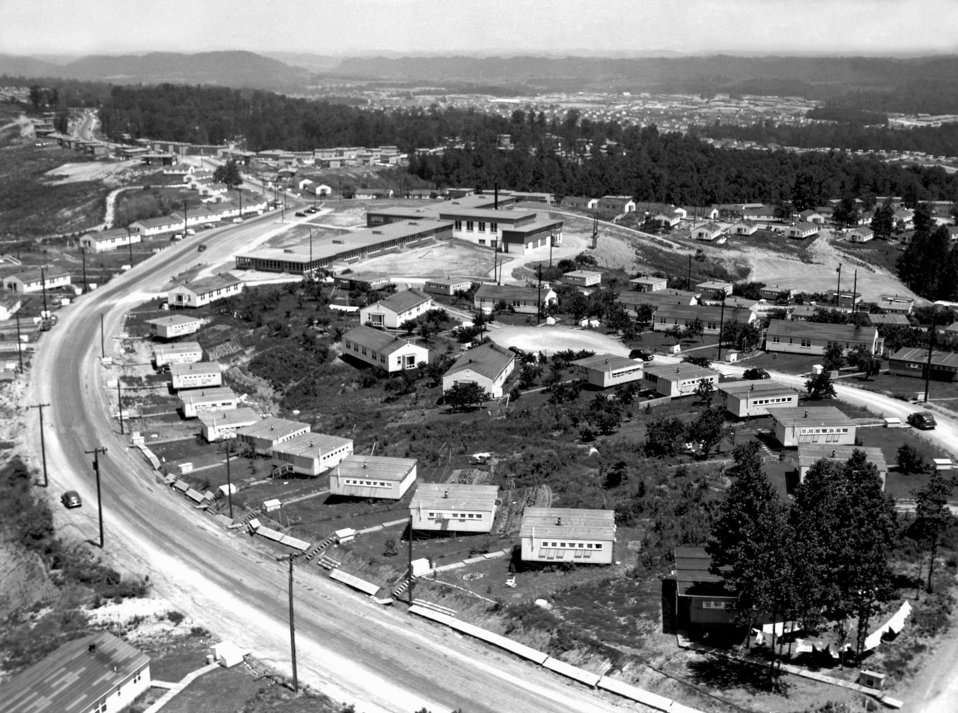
Aerial of Highland View School and Homes Oak Ridge 1945

1372 DOE photo Ed Westcott 1945 Oak Ridge Tennessee